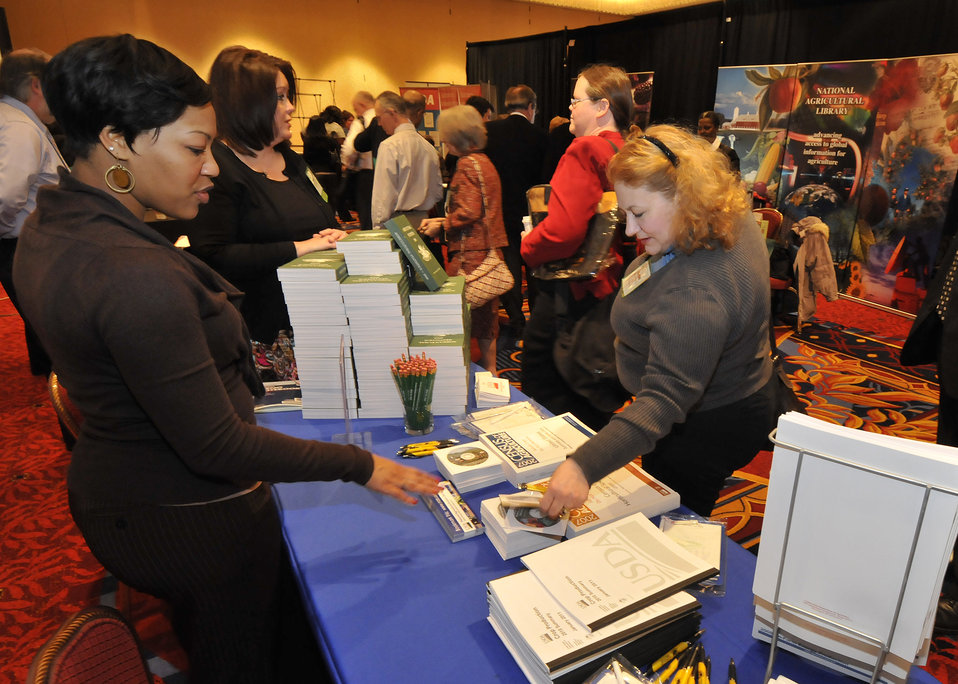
USDA exhibitors at the World Agricultural Outlook Board (WAOB) Forum in the Exhibit Hall of the Crystal City Marriott in Arlington, VA, on Thursday, February 24, 2011.